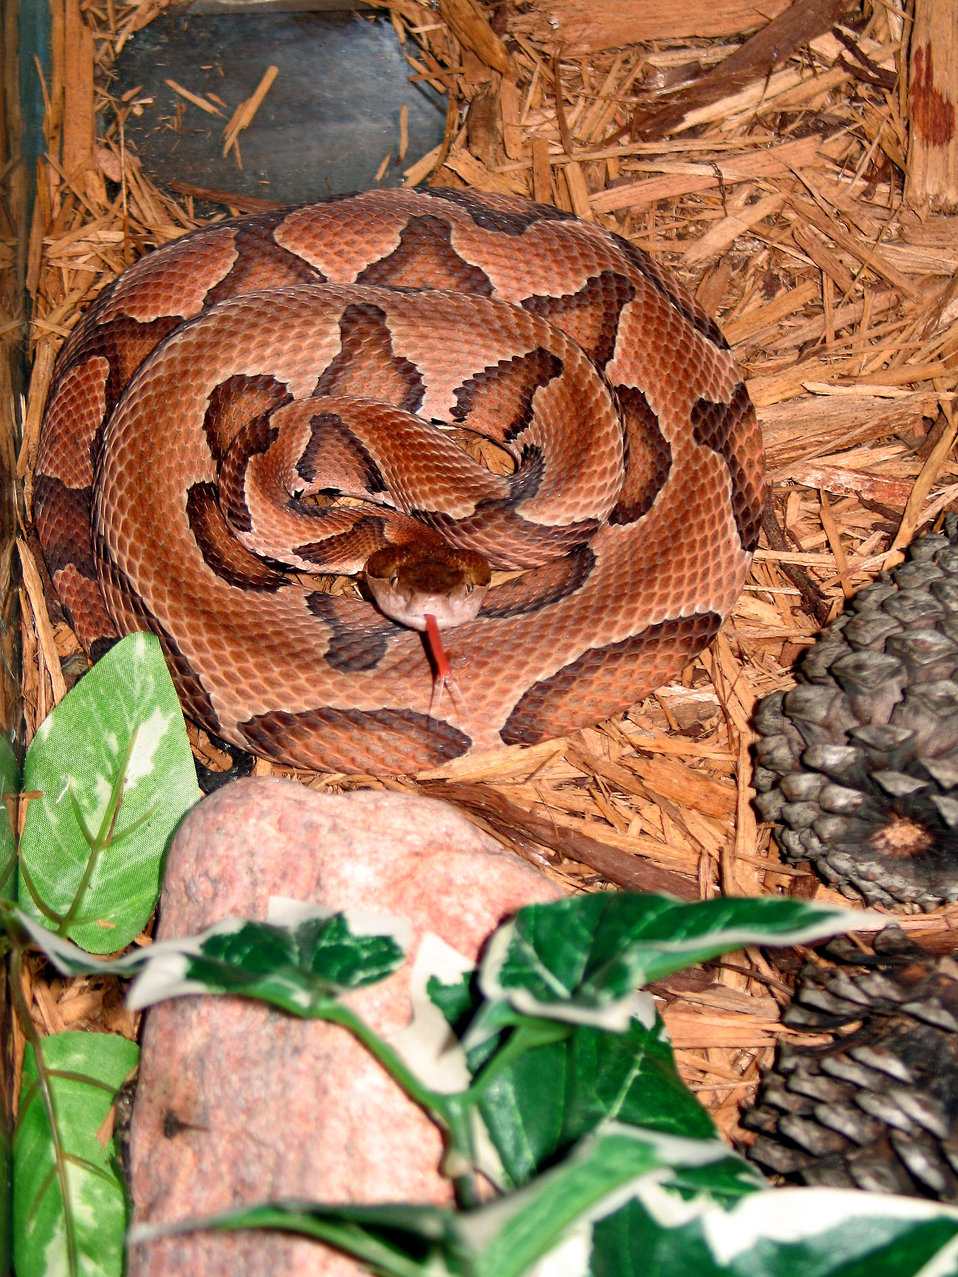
This was a venomous 'southern' copperhead, A. contortrix contortrix, a denizen of the pine and deciduous forests of southeastern United States, and perhaps one of the best known, and widest ranging copperhead subspecies. It ranges throughout the Gulf Coast States, up the Mississippi River Valley to the level of southern Illinois and along the Atlantic Coastal Plain from extreme southern Delaware into the Florida panhandle (Gloyd and Conant, 1990), placing it in hurricane-prone areas, which is of importance to those living in these regions, and first-responders offering aid to those affected by such a disaster. Its Floridian range includes Gadsen, Liberty and Calhoun counties near the Apalachicola river basin (Tennant, 1998b). Reports of copperheads elsewhere in Florida are usually attributable to sightings of lightly pigmented cottonmouths or reddish colored non-venomous species such as corn snakes (Pantherophis gutatta) that are mistakenly identified.